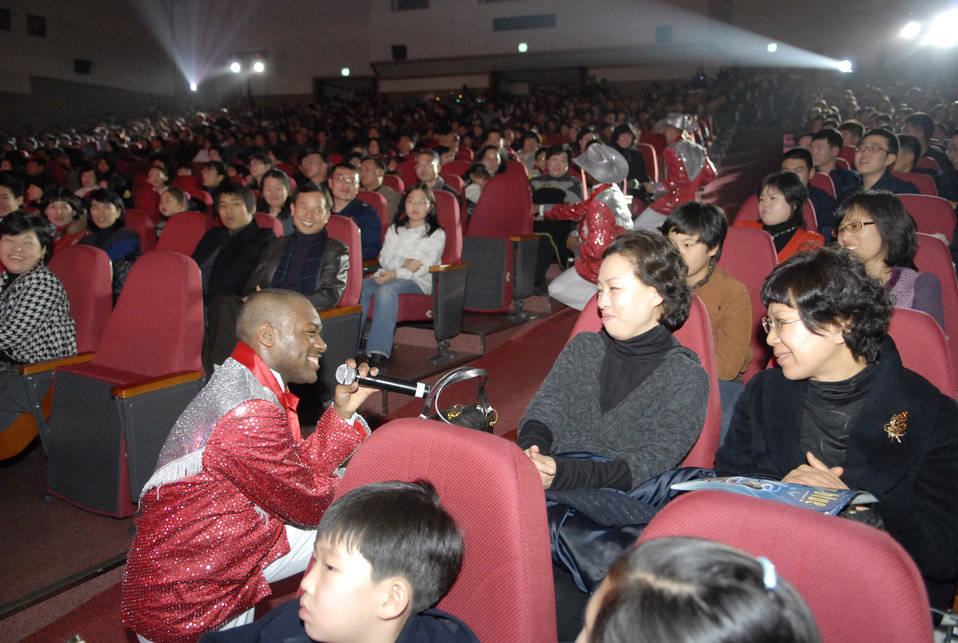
Tops In Blue Airmen entertain forces in South Korea

A member of Tops In Blue performs at the South Korean armed forces headquarters Dec. 19. This performance was part of the year-long celebration of the 60th Anniversary of the South Korean armed forces.